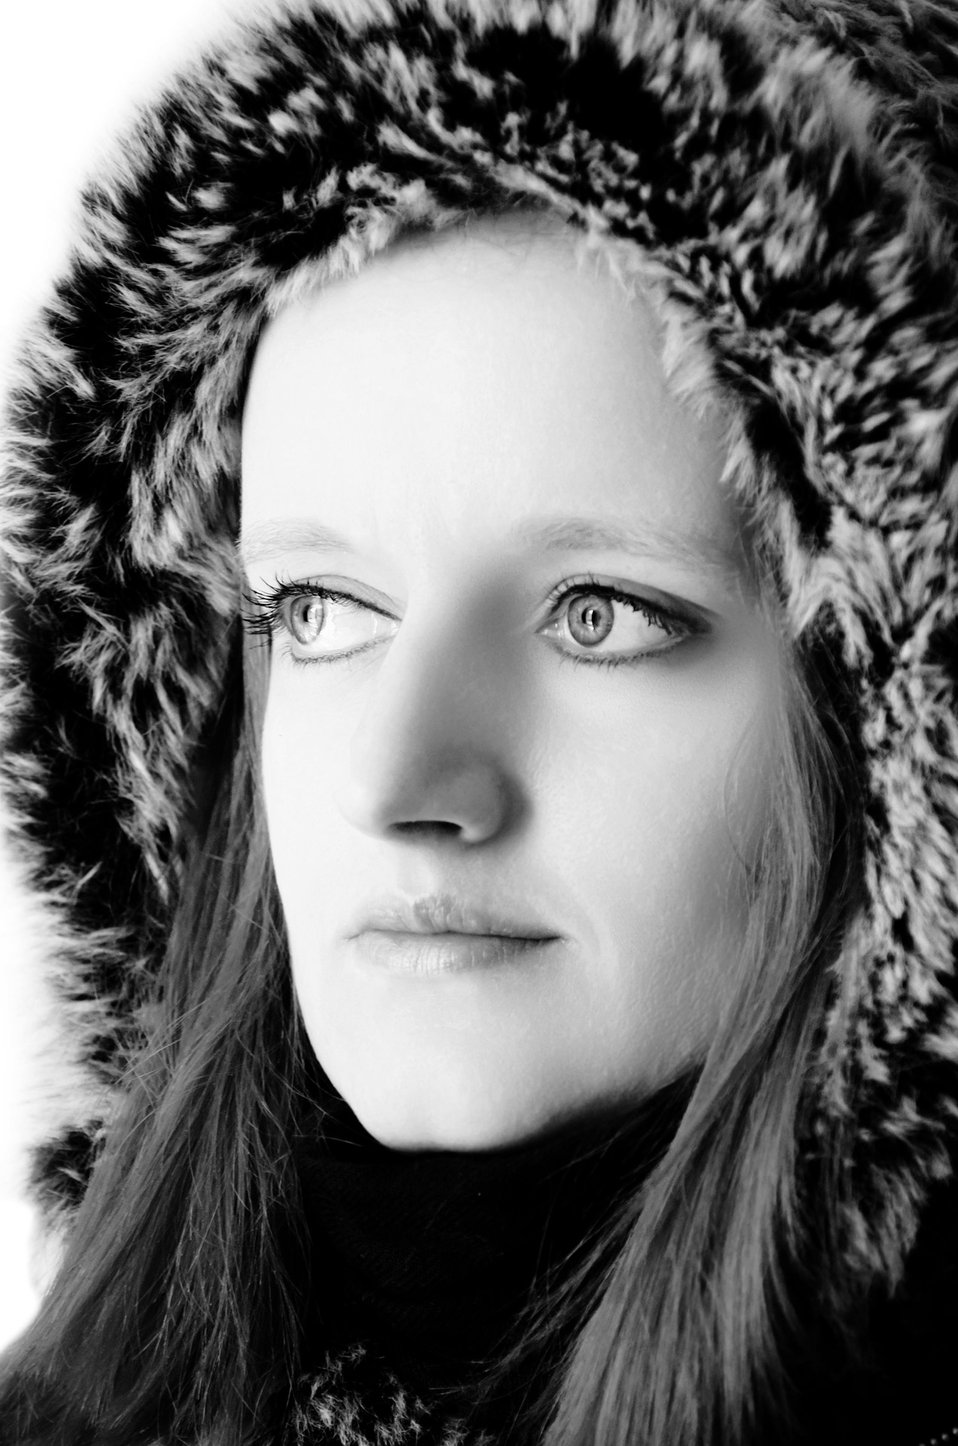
Woman - fashion - black and white.